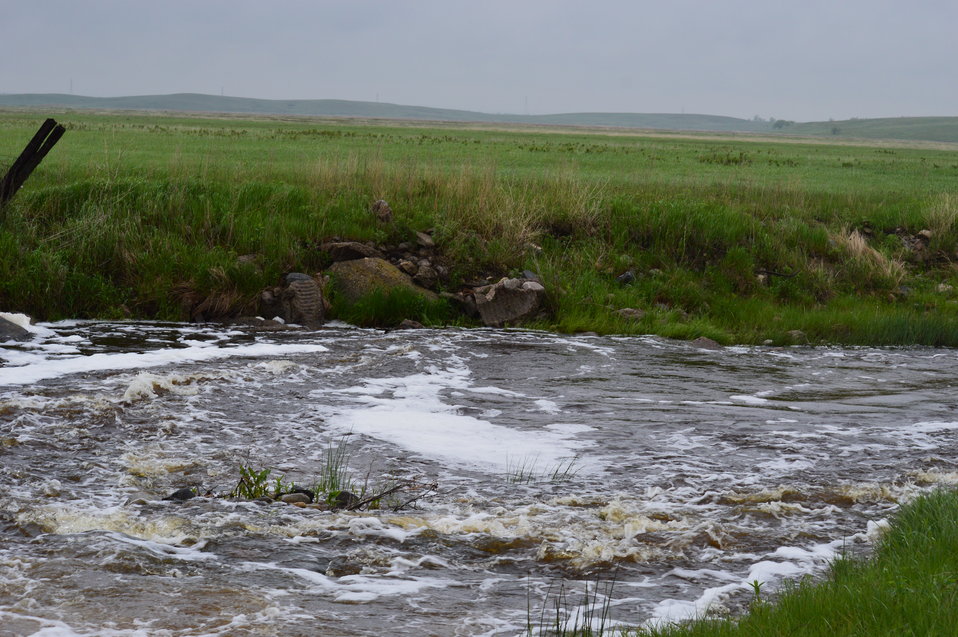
Creek through Lost Lake NWR

Scenery and wildlife at Lost Lake National Wildlife Refuge in North Dakota.